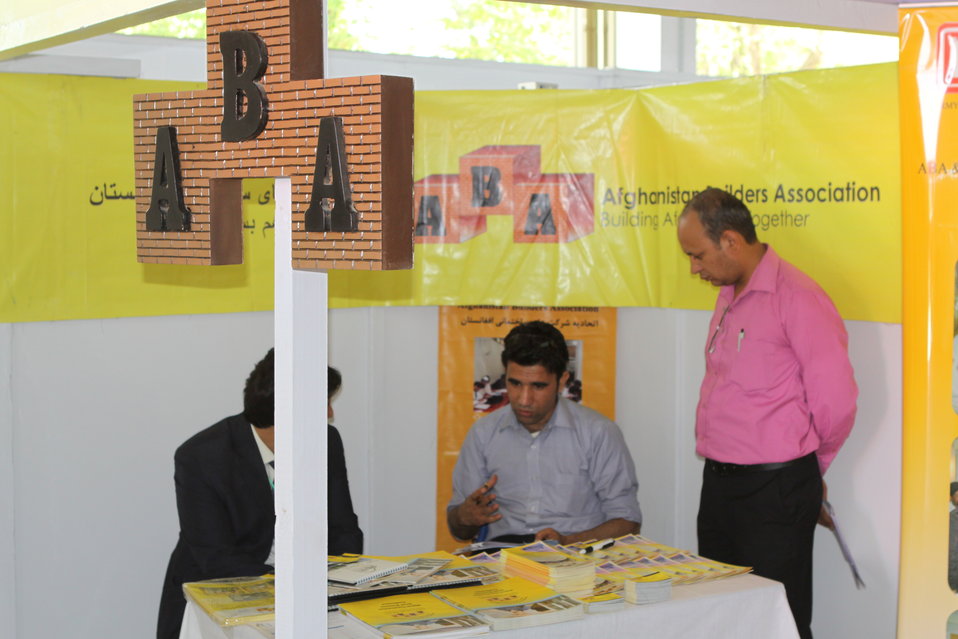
100522 ATVI Graduation 078